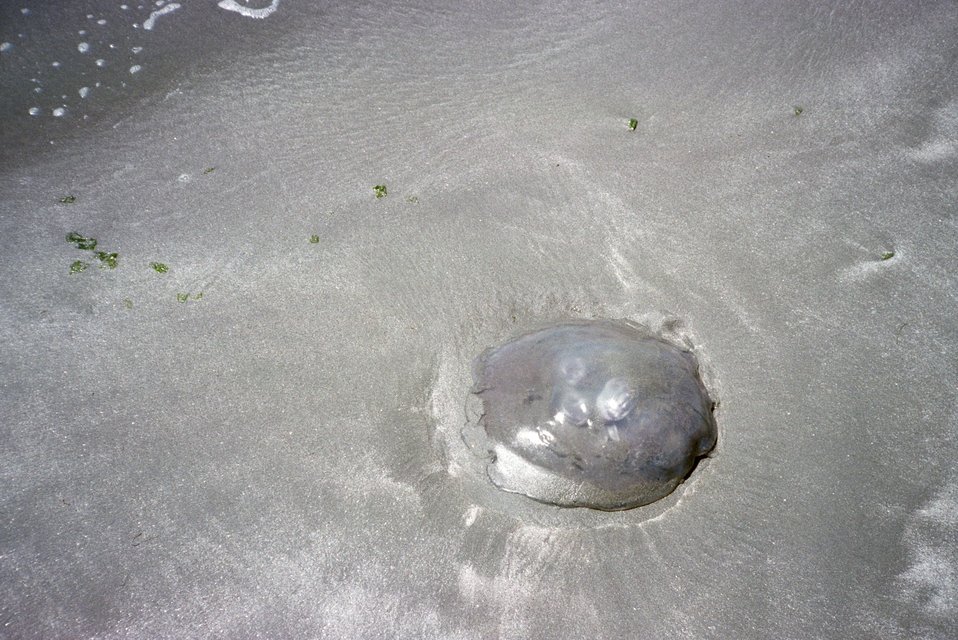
Doran Beach